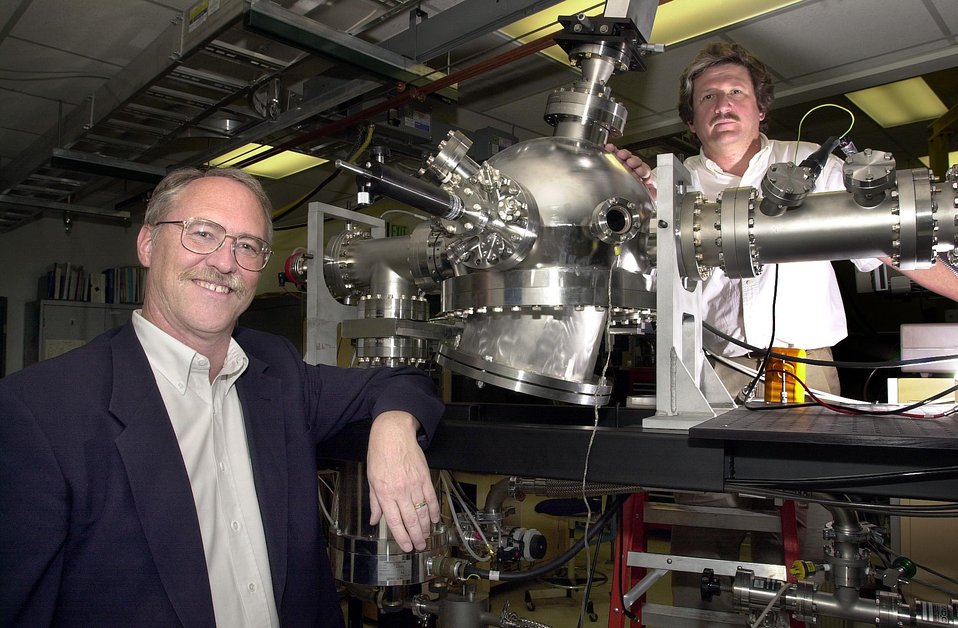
SANDIA RESEARCHERS BARNEY DOYLE AND GEORGE VIZKELETHY STANDING NEXT TO THE ION ELECTRON EMISSION MICROSCOPE THEY DEVELOPED.

THE ION ELECTRON EMISSION MICROSCOPE DEVELOPED AT SANDIA LABS, WON THE R&D 100 AWARD. THE IEEM WAS INVENTED BY RESEARCHERS FROM SANDIA AND FROM VANDERBILT UNIVERSITY AS WELL AS FROM STAIB INSTRUMENTS INC. IN GERMANY. THIS IS THE FIRST DEVICE THAT ALLOWS SCIENTISTS AND ENGINEERS TO MICROSCOPICALLY STUDY THE EFFECTS OF SINGLE IONS ON SEMICONDUCTORS, INTEGRATED CIRCUITS, AND BIOLOGICAL SPECIMENS WITHOUT HAVING TO FOCUS THE MEV ION BEAM.